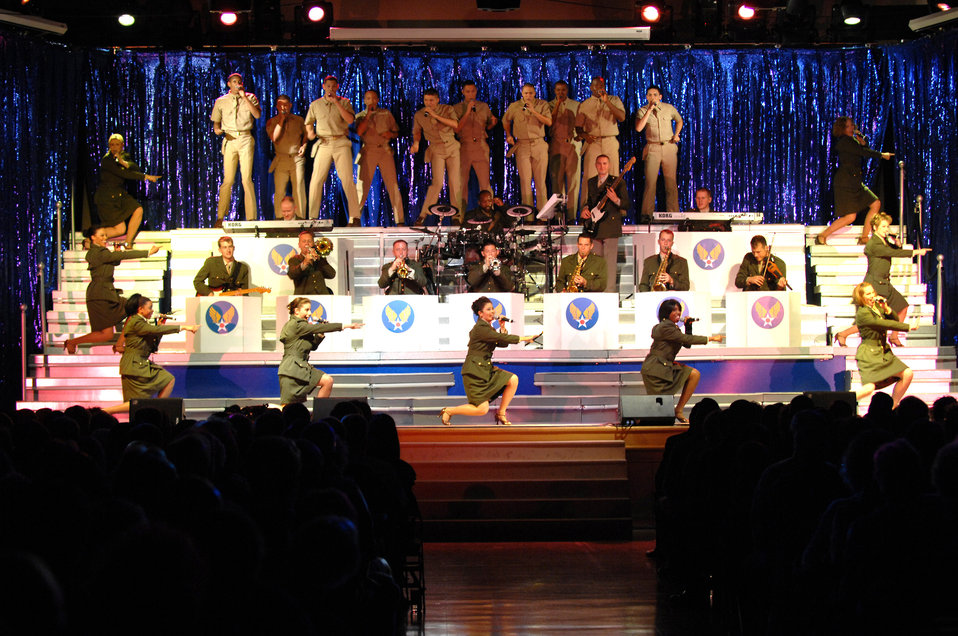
Tops in Blue Airmen strut their stuff

Tops in Blue Airmen sing and perform before a crowd May 24 at the Tays Center near Holloman Air Force Base in Alamogordo, N.M. Tops In Blue Airmen perform an average of 120 performances at 100 locations worldwide each year members around the world. Tops in Blue showcases music, dance and comedy, all performed by active-duty Airmen who perform 90 minutes of non-stop live entertainment.